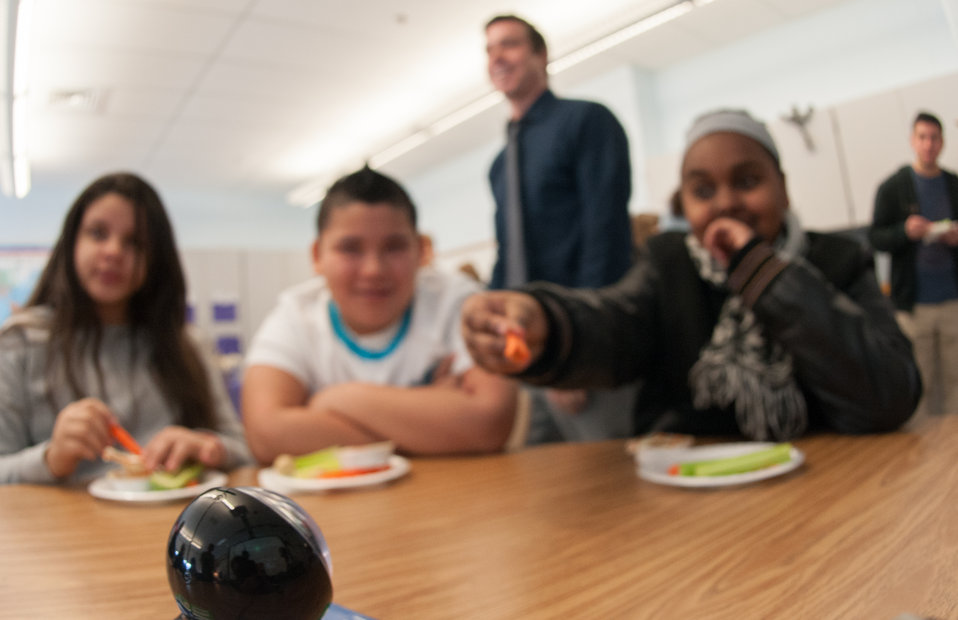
A computer camera, lower left, captures one of Mr. Damien Grasso's Harmony Hills Elementary School 5th grade students, in Silver Spring, MD trying to visually offer hummus on a carrot stick, to viewers at Dalry Primary School, in North Ayershire, Scotland, United Kingdom The students used live overseas video connection, during the inaugural International School Meals Day (ISMD) at Harmony Hills Elementary School in Silver Spring, MD, on Friday, March 8, 2013. The ISMD has 14 classrooms (grades 3-8) in the U.S. connected with 14 classrooms in Scotland. USDA plans to expand the initiative to include partnerships with additional countries in future years. USDA's Food and Nutrition Service oversees the administration of 15 nutrition assistance programs that work in concert to form a national safety net against hunger. Learn more by visiting www.fns.usda.gov and twitter @USDANutrition.